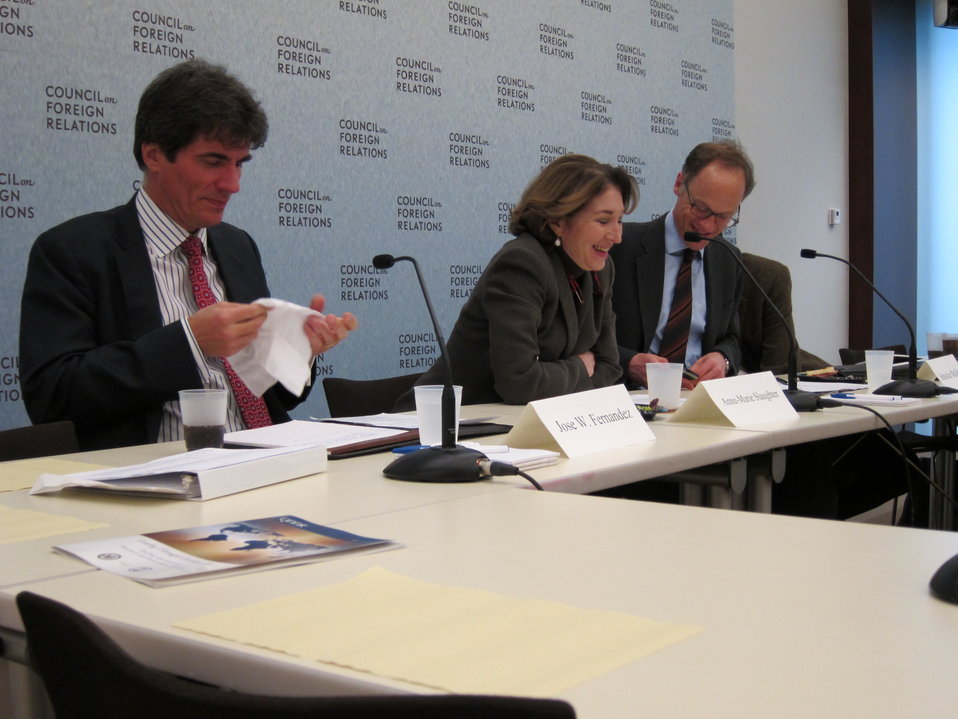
Assistant Secretary Fernandez Participates in a Roundtable Discussion

Assistant Secretary of State for Economic, Energy and Business Affairs Jose Fernandez participates in a roundtable discussion at the Council on Foreign Relations (CFR) in Washington, D.C., on January 12, 2011.